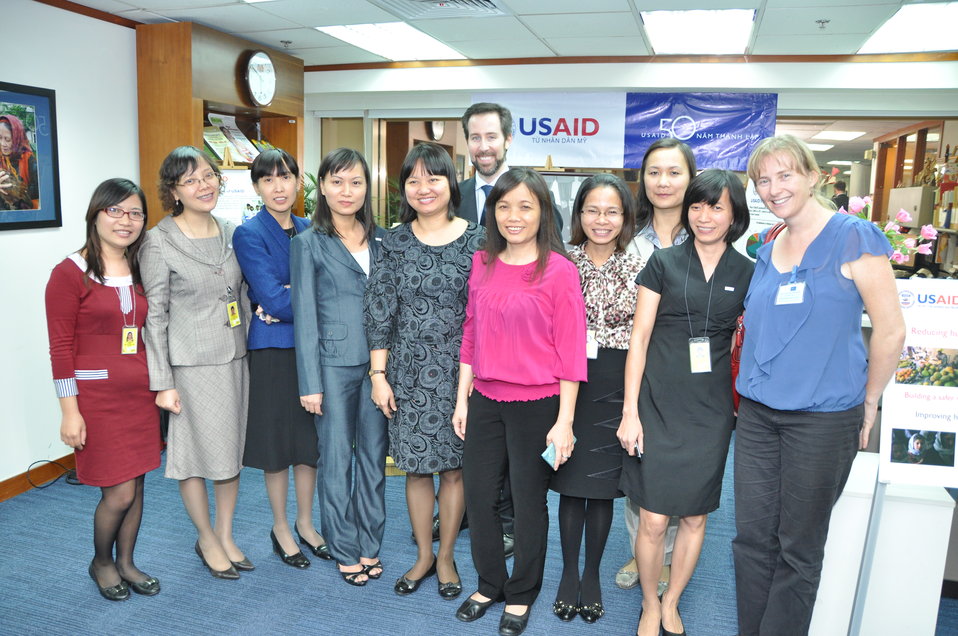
USAID Vietnam Open House 50th Anniversary, Hanoi